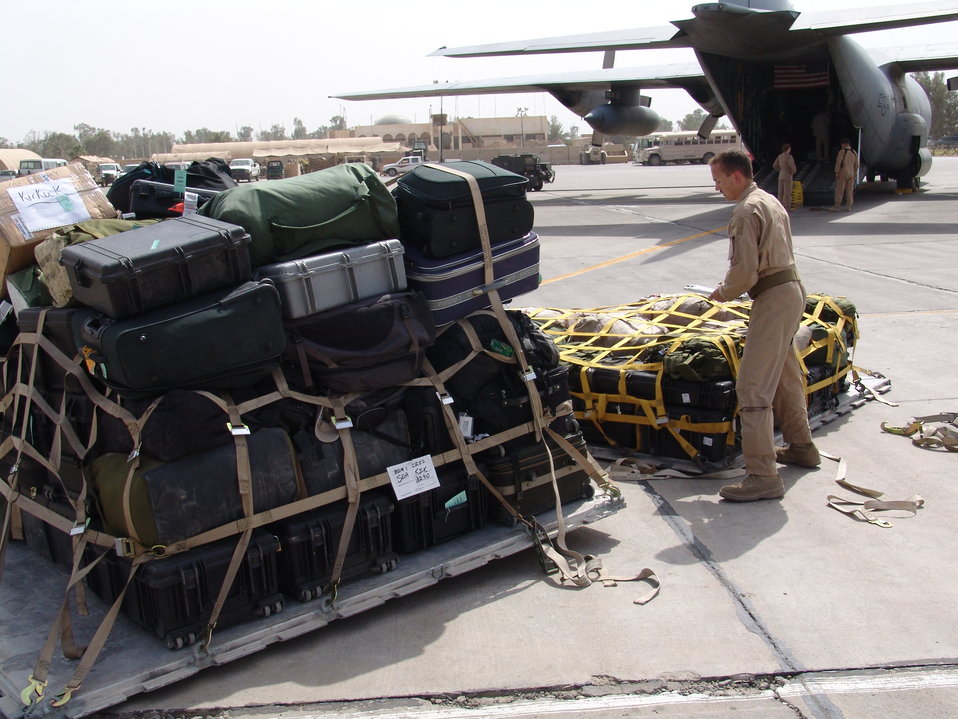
Mission time

BAGHDAD, Iraq -- Staff Sgt Brian McKinney counts pallets being unloaded at Baghdad International Airport after a tactical airlift mission here. He is assigned to the 737th Expeditionary Airlift Squadron at a forward-deployed location and is from Pope Air Force Base, N.C.